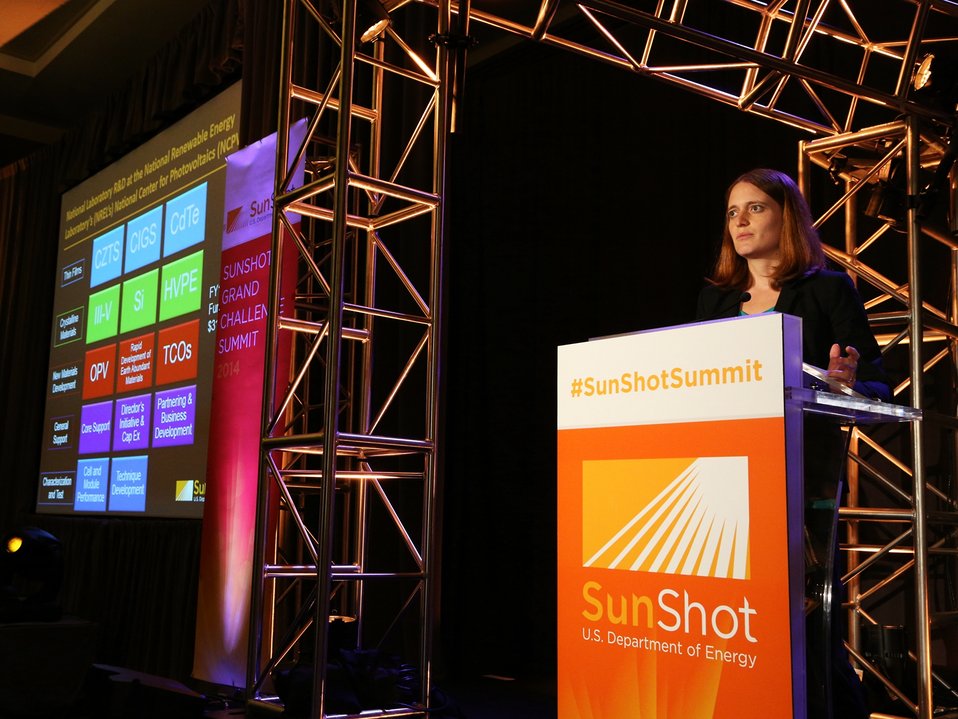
Day 2 Keynote Session 25

Dr. Becca Jones-Albertus, Photovoltaics Program Manager providing a SunShot Portfolio Overview.